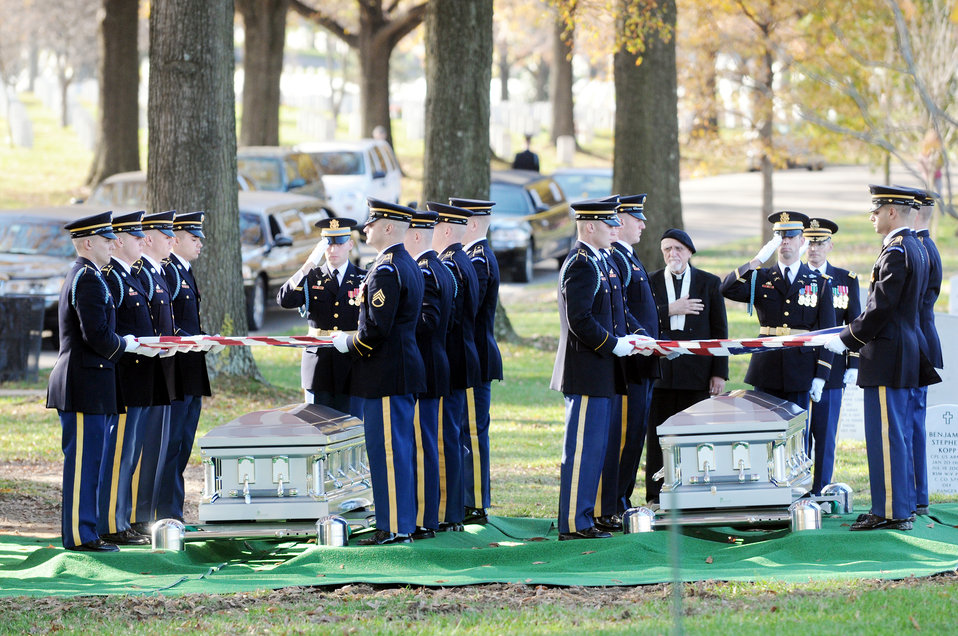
Funeral highlights search for missing servicemembers

Two high ranking military members render a salute as the honor guard prepare the flags to present to family members of members of the World War II B-25 crew that was lost Dec. 5, 1942 near Papua, New Guinea, at an interment at Arlington National Ceremony in Virginia.